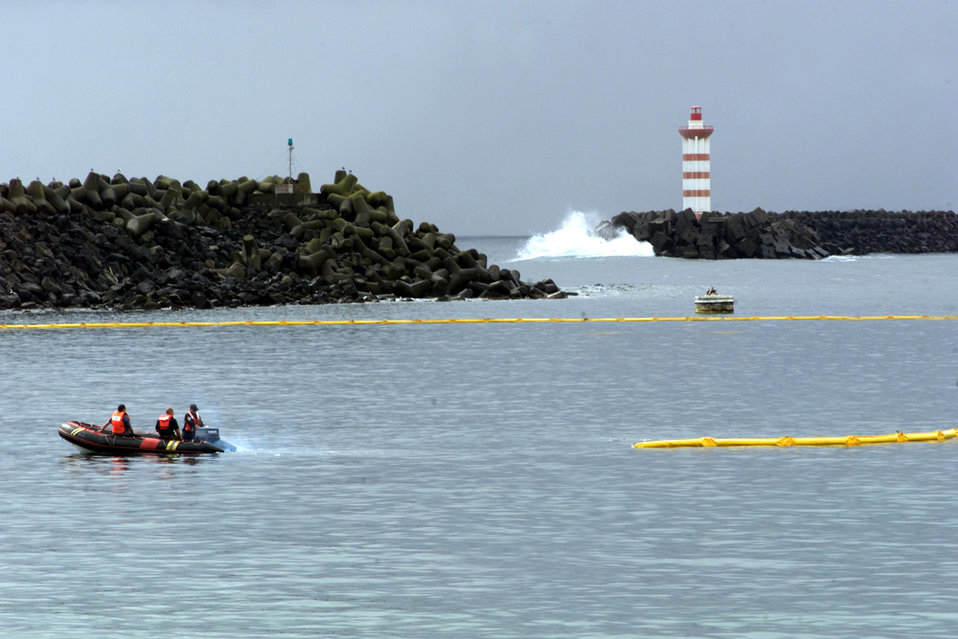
Island Exercise

PORTUGAL -- A team lays down a